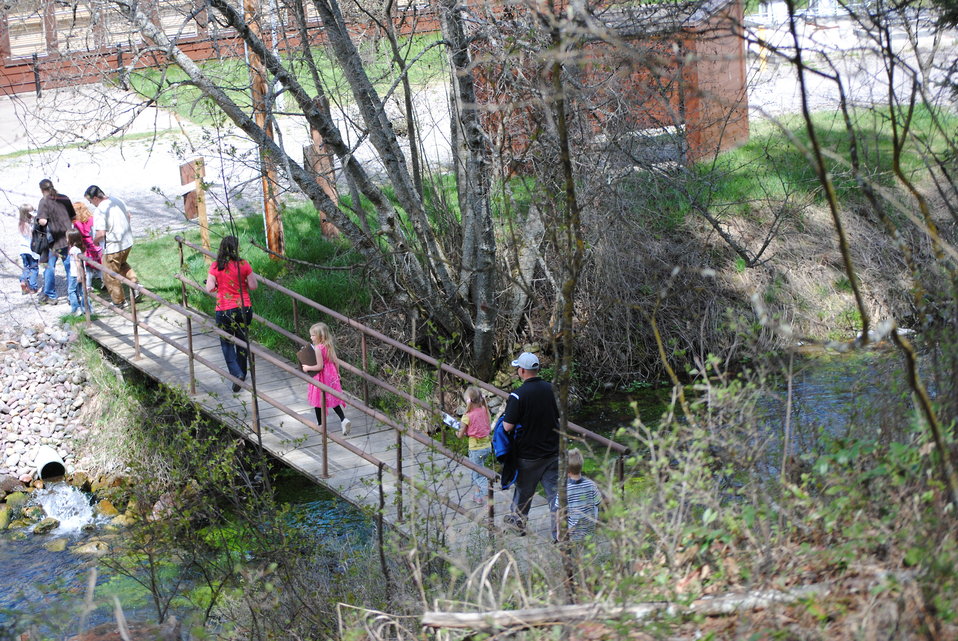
Creston National Fish Hatchery's Nature Trail

School groups and families can enjoy the Nature Trail, with its thirteen stations full of fun for all ages, then take a tour of the fish hatchery when done.